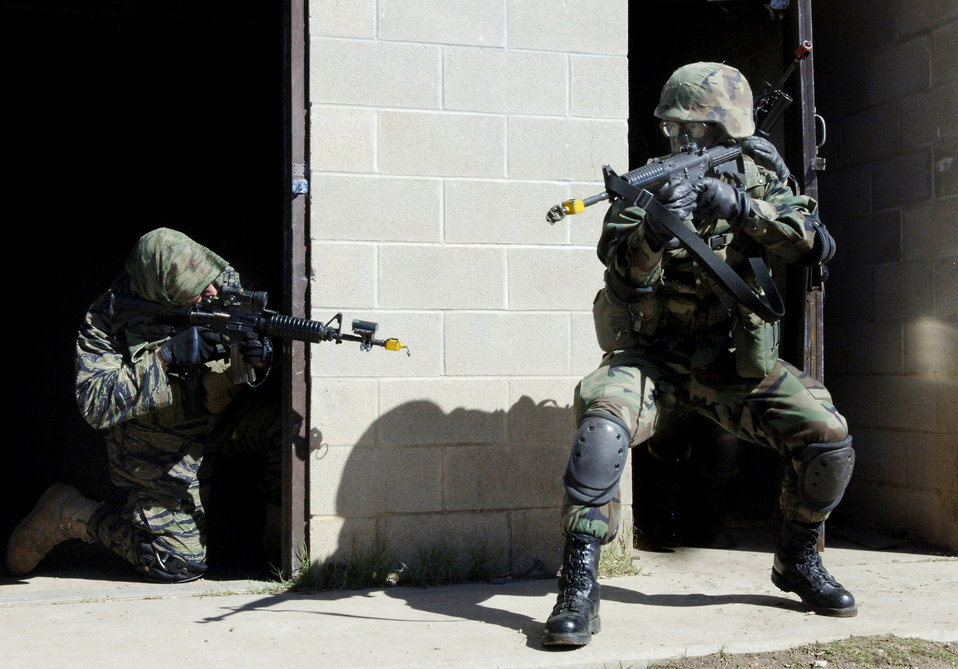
Military ops

LACKLAND AIR FORCE BASE, Texas (AFPN) -- Airman 1st Class Tremayne Williams (right) reacts to an instructor playing the role of the opposition force during security forces technical training here Jan. 30. This three-week portion of their training familiarizes Airmen with concepts and tactics used in basic military operations in urban terrain.